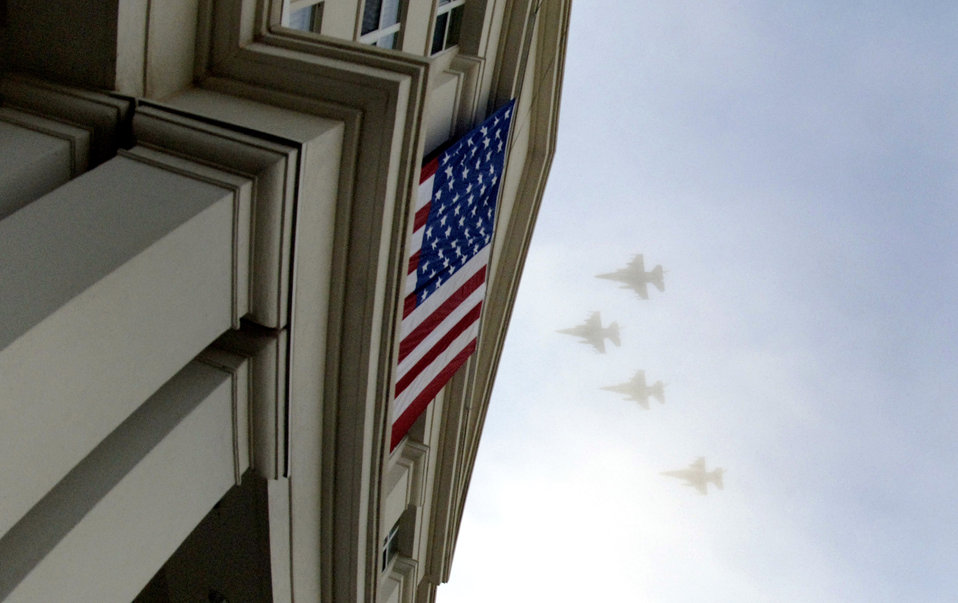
Air Force Week Atlanta kicks off

Air Force F-16 Fighting Falcons flying out of Dobbins Air Reserve Base, Ga., perform a fly-by over the Marietta conference center during the opening ceremonies of Air Force Week Atlanta Oct. 8. The Air Force Week program is meant to increase the awareness and support of the public by informing them and involving them in activities that showcase the Air Force's diverse capabilities and missions, its accomplishments and the sacrifice of its Airmen. Atlanta is one of six cities throughout the country chosen to host an Air Force Week Oct. 8 to 14. The theme for the year is